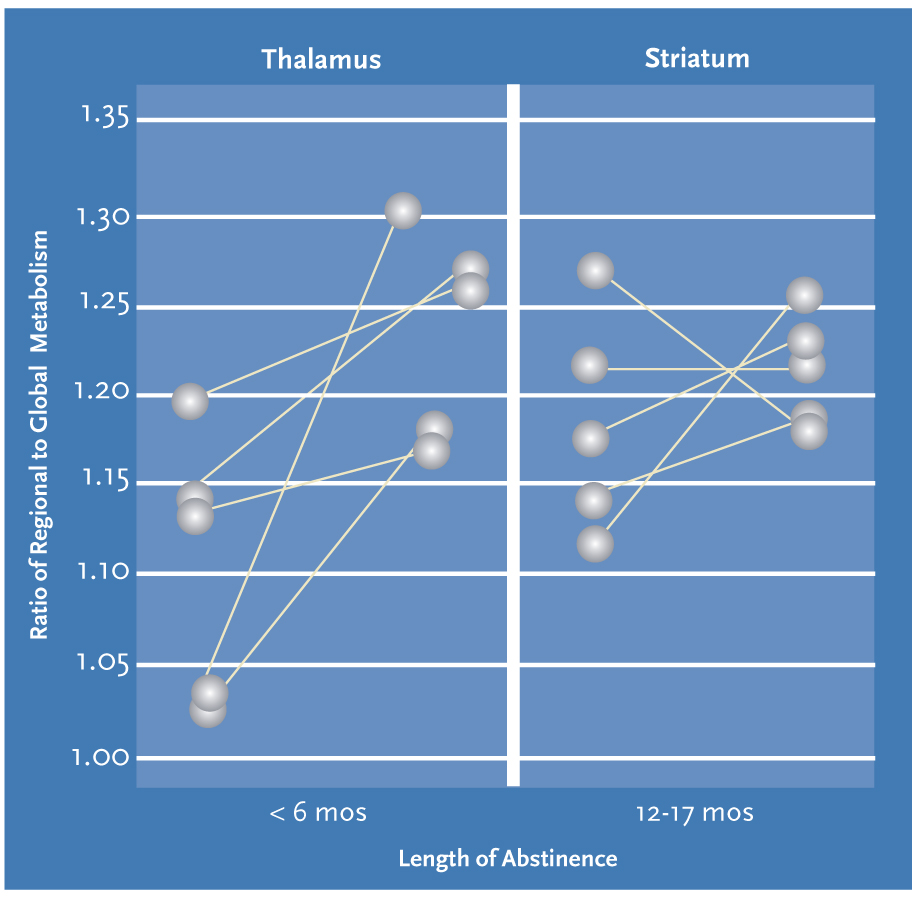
Diagram

Brain recovery occurs with methamphetamine abstinence